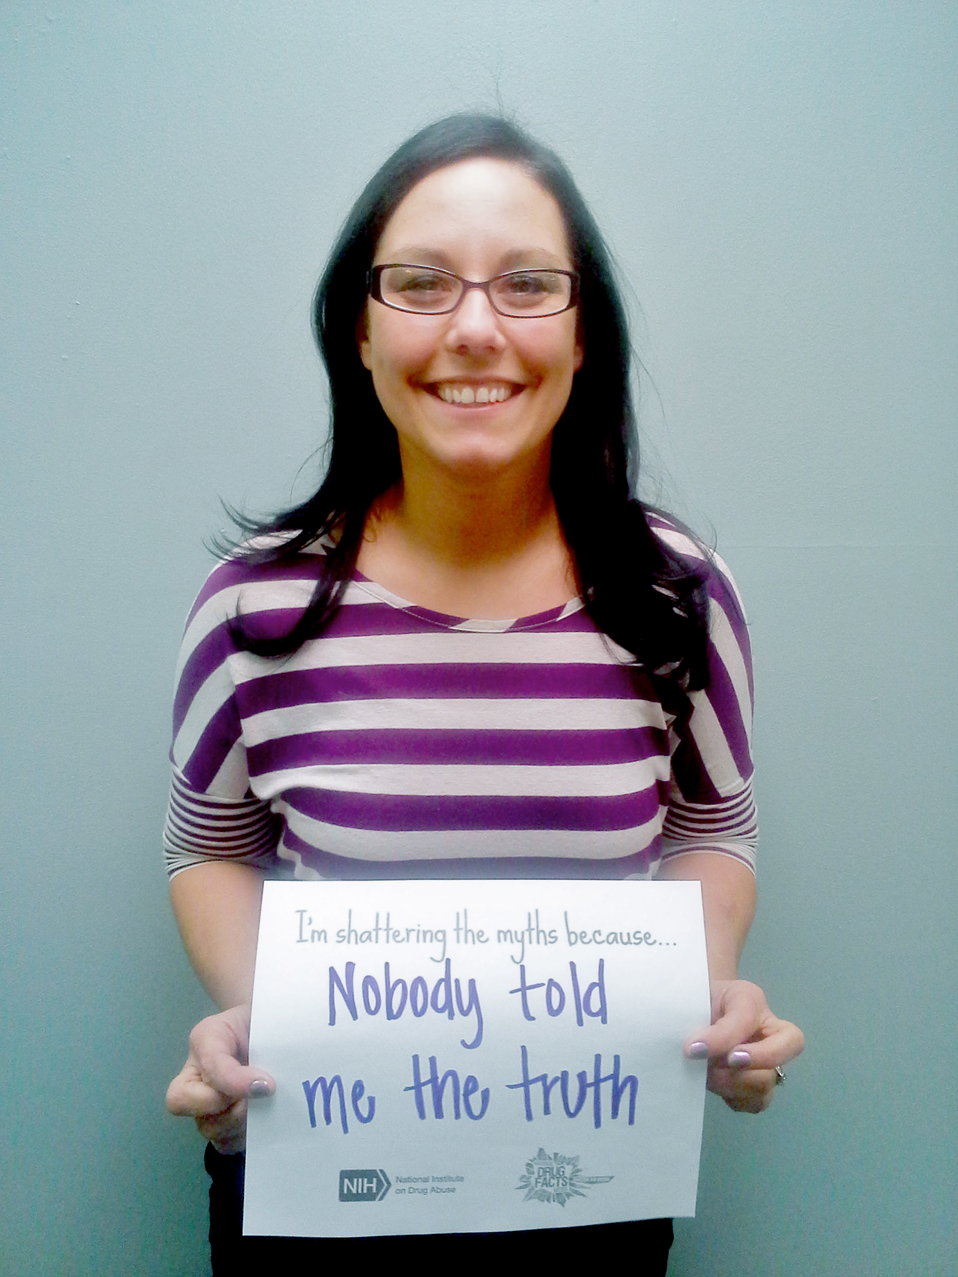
Shattering the Myths campaign in Winona, Minnesota